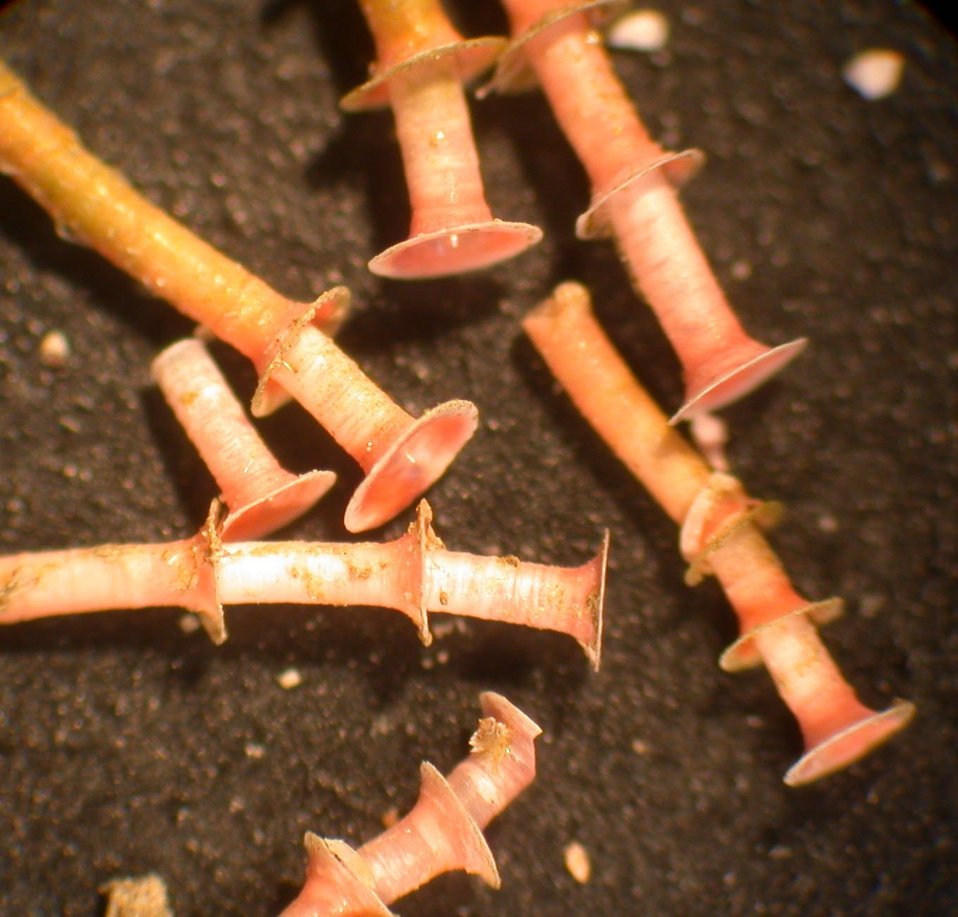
Tiny tubes built as housing by serpulid tube-worms were clustered in a small forest-like grove on one of the rocks collected. These tubes are about a quarter inch long and are shown here as viewed through a dissecting microscope on board the ship.